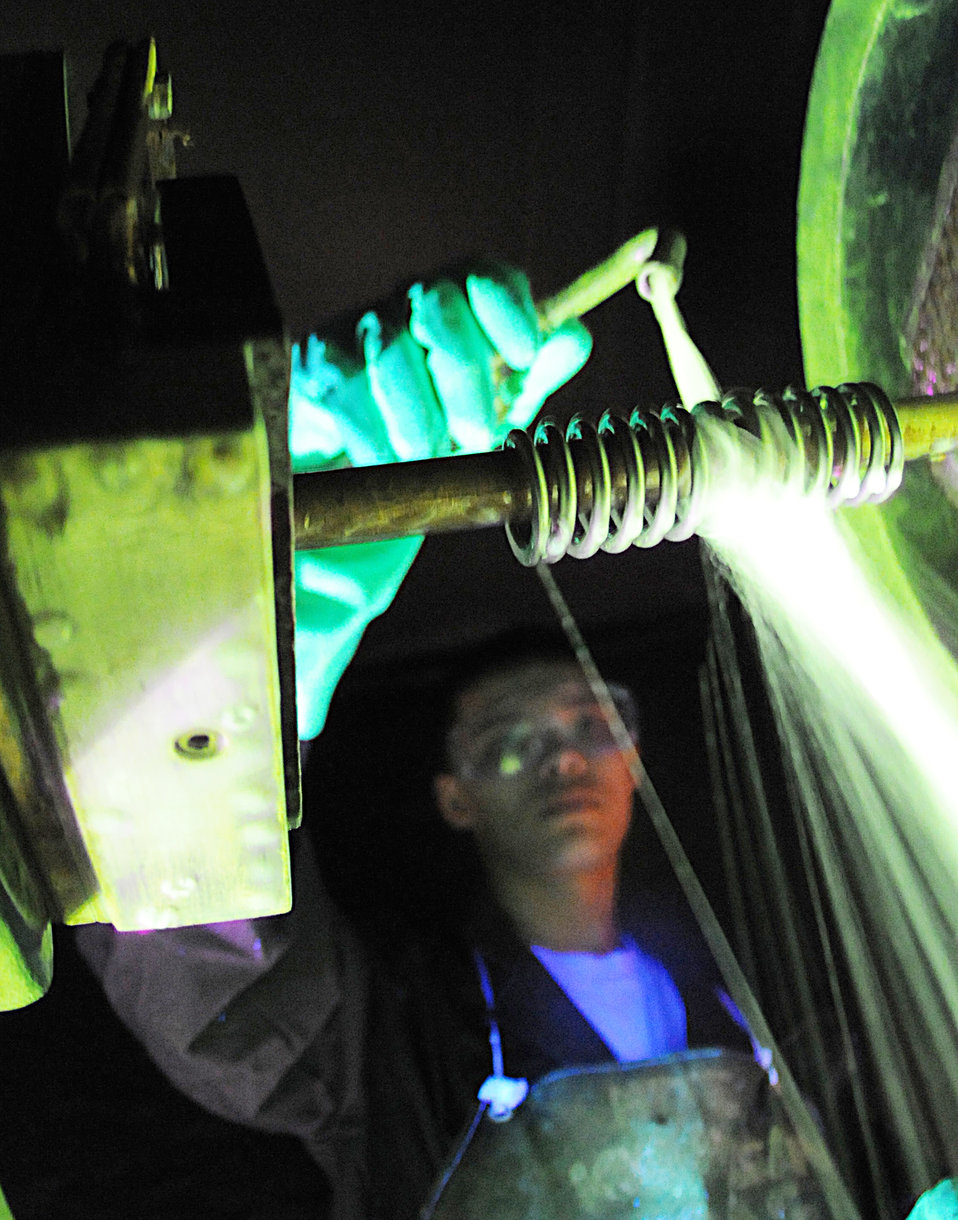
Black light inspection

At the non-destructive inspection shop, Airman 1st Class Christopher Bovill pours a microscopic iron solution over a spring inside a magnetic particle machine March 9, 2010, at RAF Mildenhall, England. Airman Bovil is a NDI technician with the 100th Maintenance Group.